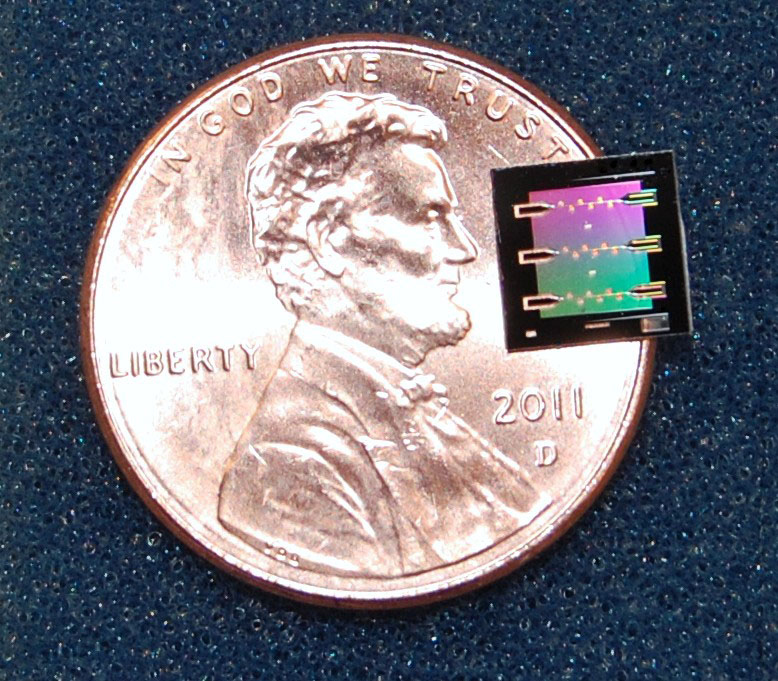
Micro Drum

Multiple versions of NIST's superconducting circuit containing a 'micro drum' were fabricated on this sapphire chip, shown next to a penny for scale. NIST scientists cooled one such drum to the lowest possible energy level, the quantum ground state.

For more information see the NIST Tech Beat story.